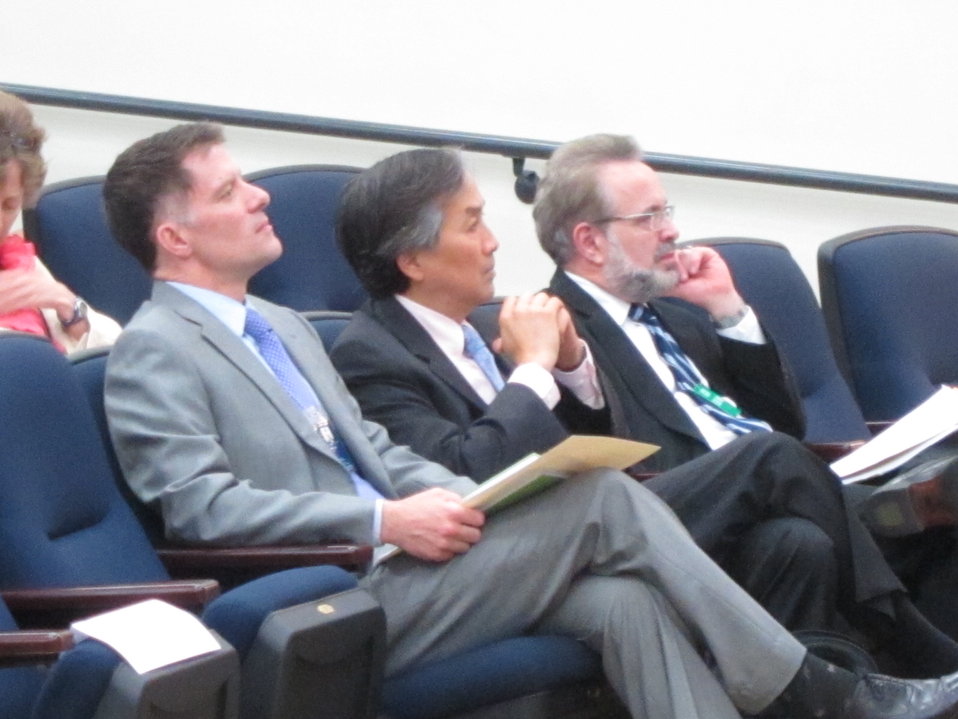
WH 2012 World Hepatitis Day Event